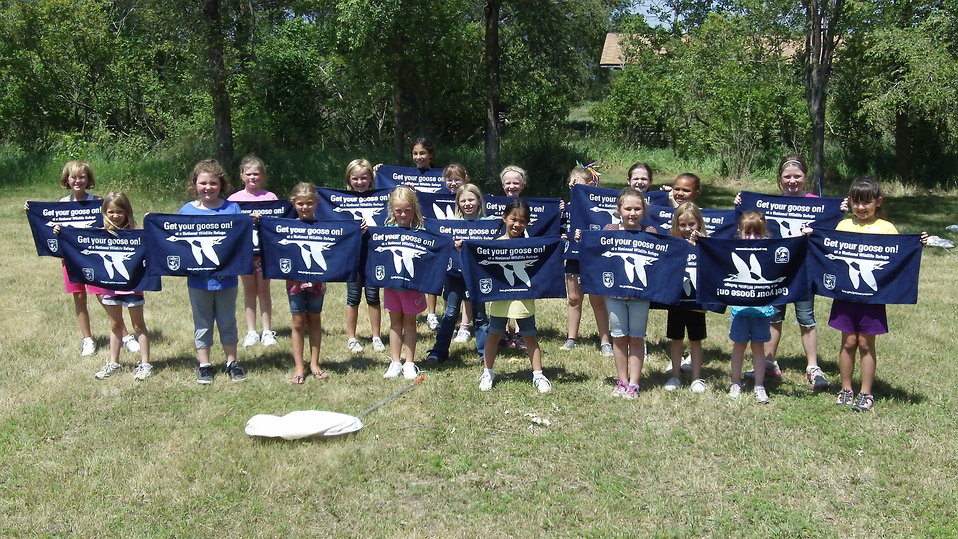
Get Your Goose On!

Photo taken at Huron Wetland Management District in east-central South Dakota.